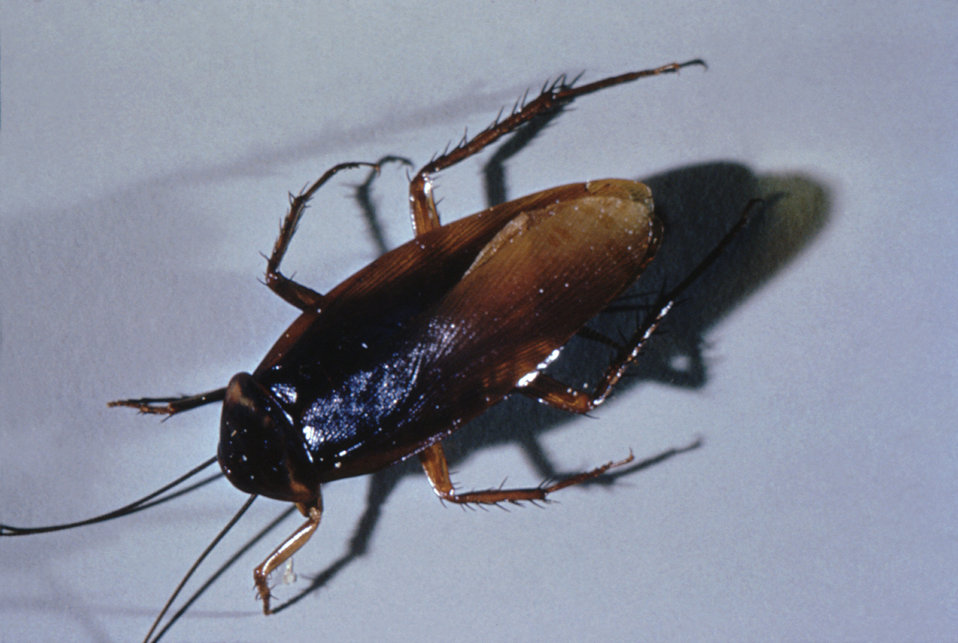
This photograph of an adult cockroach was taken during a 1972 study of disease carriers, and pests of migrant labor camps.